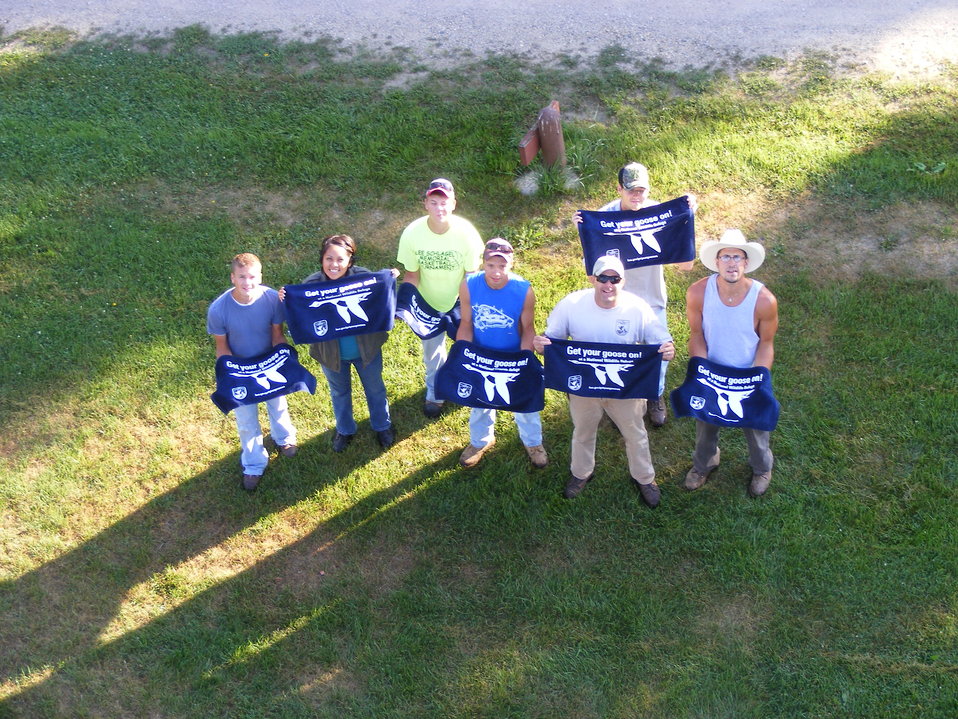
Get Your Goose On!

Gettin' weird at Waubay National Wildlife Refuge in South Dakota.